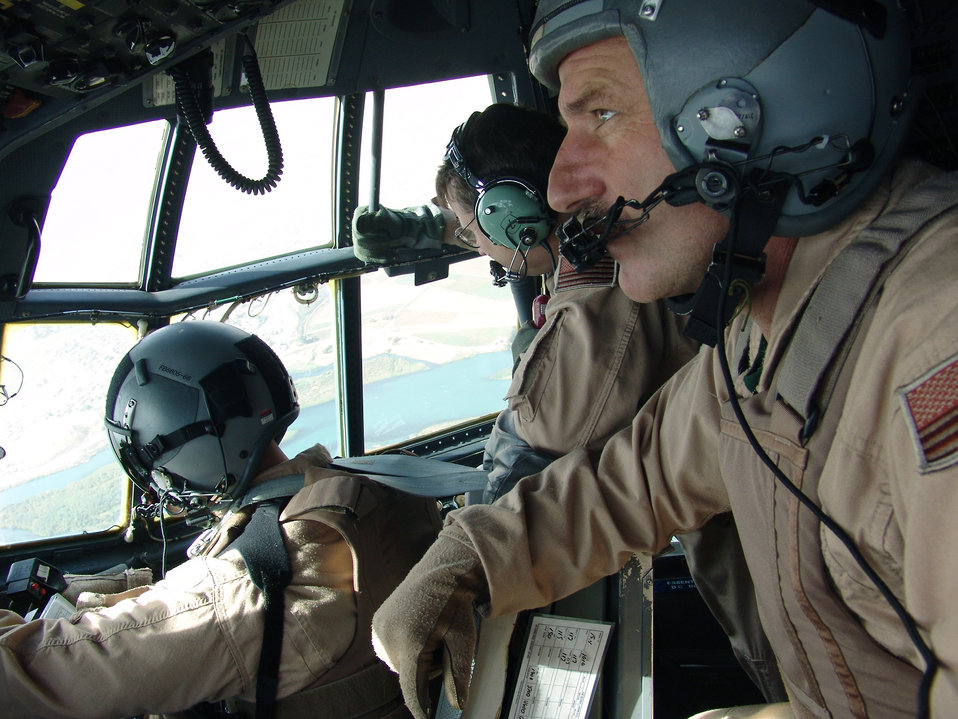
Into Iraq

OVER IRAQ -- (From left) Majs. Ed Stack and Mark Parker and Tech. Sgt. Karl Schramm scan the sky during a C-130 Hercules mission to Iraq. The Airmen are assigned to the 386th Expeditionary Airlift Squadron at a forward-deployed location. Major Stack is a co-pilot, Major Parker is a navigator, and Sergeant Schramm is a loadmaster. They are deployed supporting Operation Iraqi Freedom from the 440th Airlift Wing at the General Mitchell Air Reserve Station, Wis.